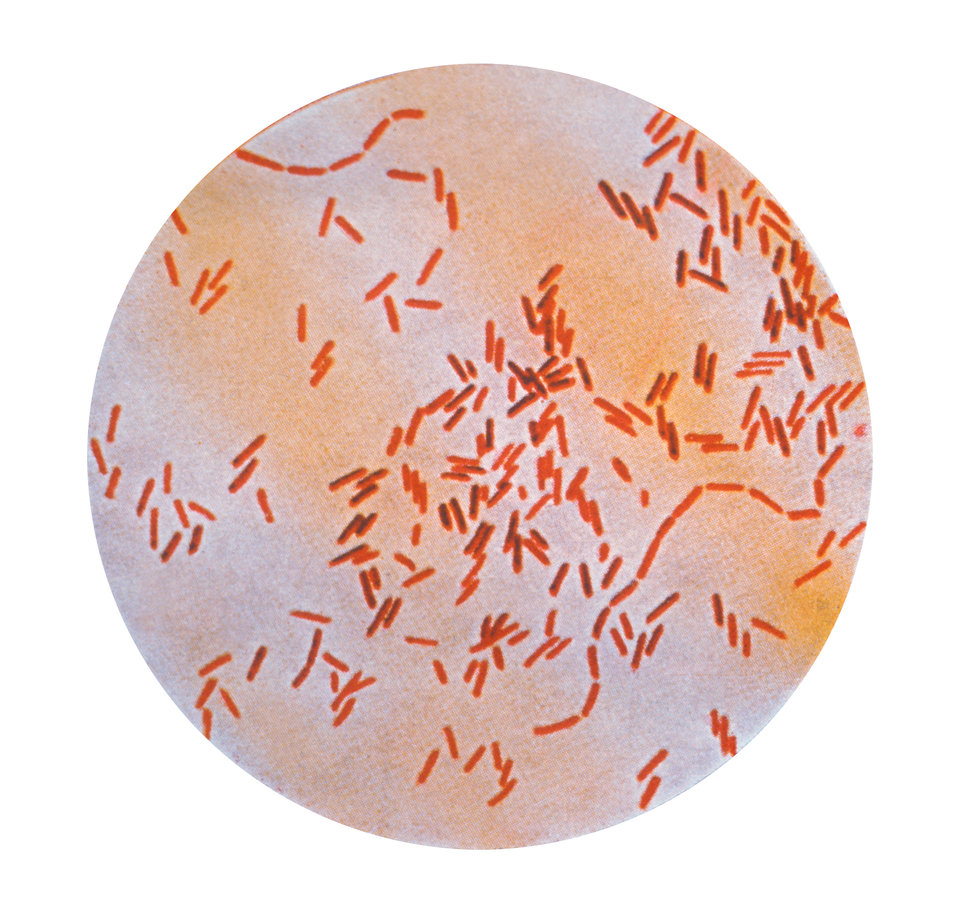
A photomicrograph of Salmonella typhosus bacteria using a Gram stain technique.